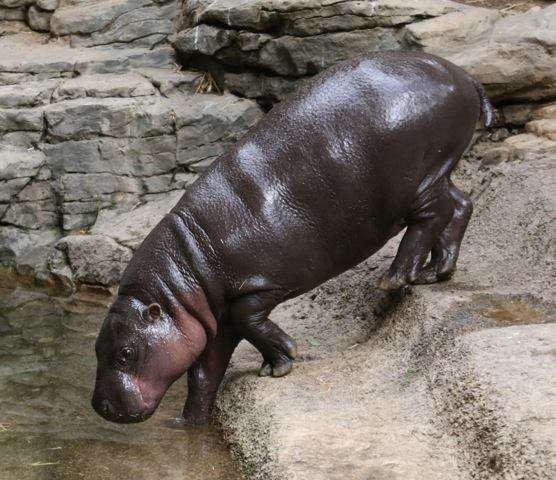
Photo of the Week - Inocencio (MA)

Photo of the Week - 2/24/14

Inocencio, a pygmy hippo, made his debut this week at the Franklin Park Zoo in Boston! Hailing from Chile, he arrived in the U.S. just before the holidays. In the interest of conserving this endangered species, the hope is that he’ll breed with a female pygmy hippo, Cleopatra, already residing in the zoo’s Tropical Forest exhibit. The North American captive pygmy hippo population is small — with only about 61 individuals — and highly skewed toward females, so Inocencio is crucial to the effort to create a self-sustaining population.

Read our blog post announcing Inocencio's arrival in the U.S. - bit.ly/19KOC13